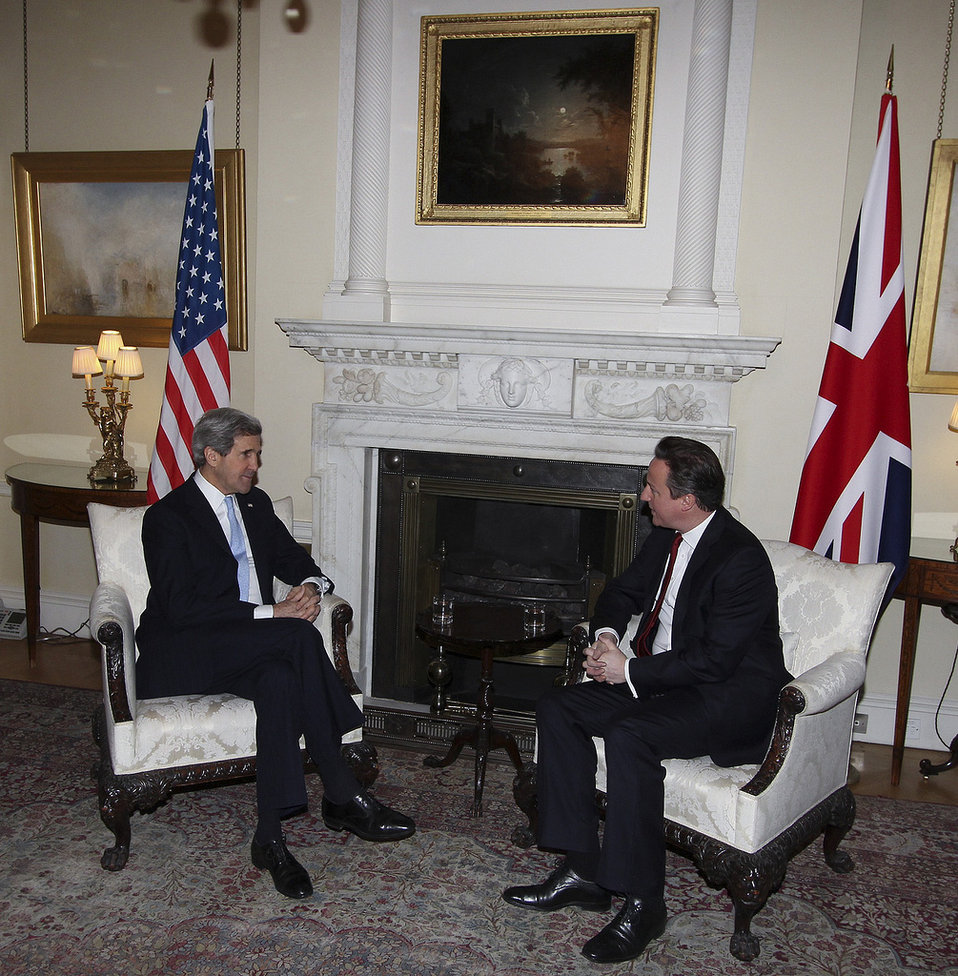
Secretary Kerry Meets With UK Prime Minister Cameron

U.S. Secretary of State John Kerry meets with UK Prime Minister David Cameron at No. 10 Downing Street in London, United Kingdom, February 25, 2013.